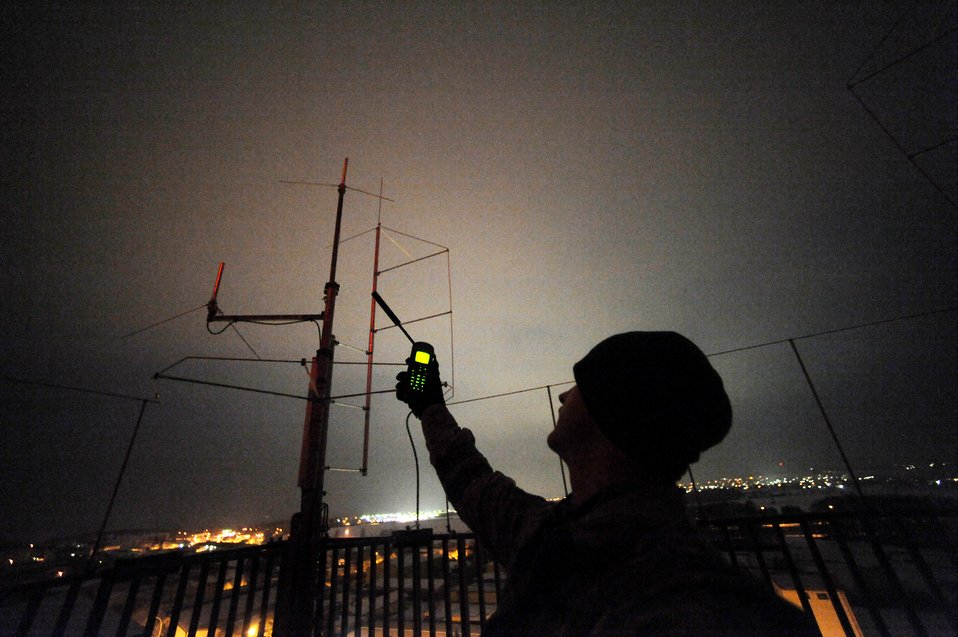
Ramstein forces practice air insertion

Staff Sgt. Ronald Booth, with the 435th Security Forces Squadron at Ramstein Air Base, Germany, sends information regarding the insertion mission at Bitburg Airport, Germany, Jan. 25, 2010, in preparation of Ramstein's operational readiness inspection in September.